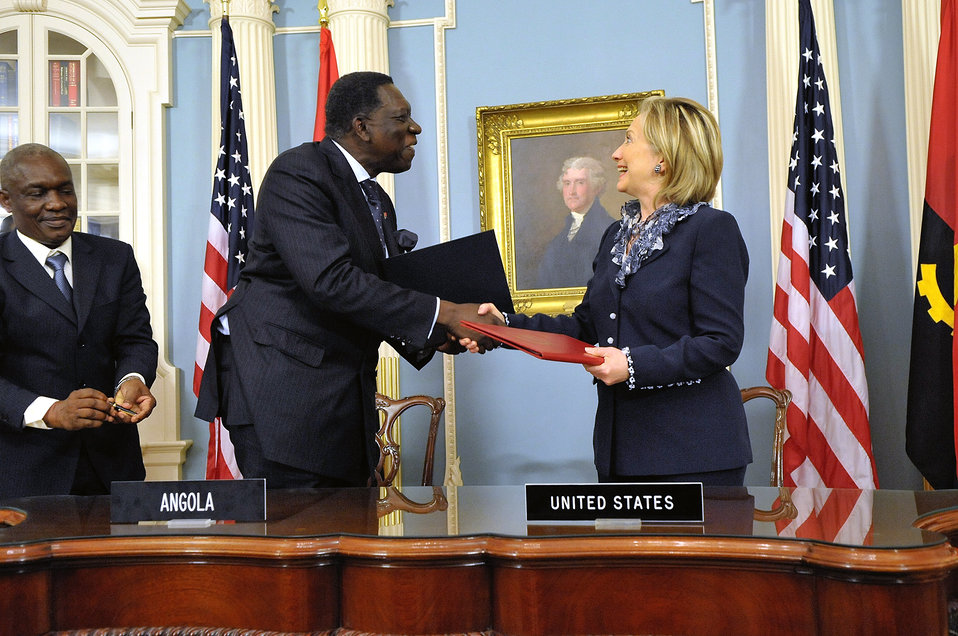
Secretary Clinton and Angolan Foreign Minister Asuncao Afonso dos Anjos Shake Hands After Signing a Memorandum of Understanding

U.S. Secretary of State Hillary Rodham Clinton and Angolan Foreign Minister Asuncao Afonso dos Anjos shake hands after a signing ceremony for a memorandum of understanding establishing the U.S.-Angola Strategic Partnership Dialogue at the U.S. Department of State in Washington, D.C., on July 8, 2010.